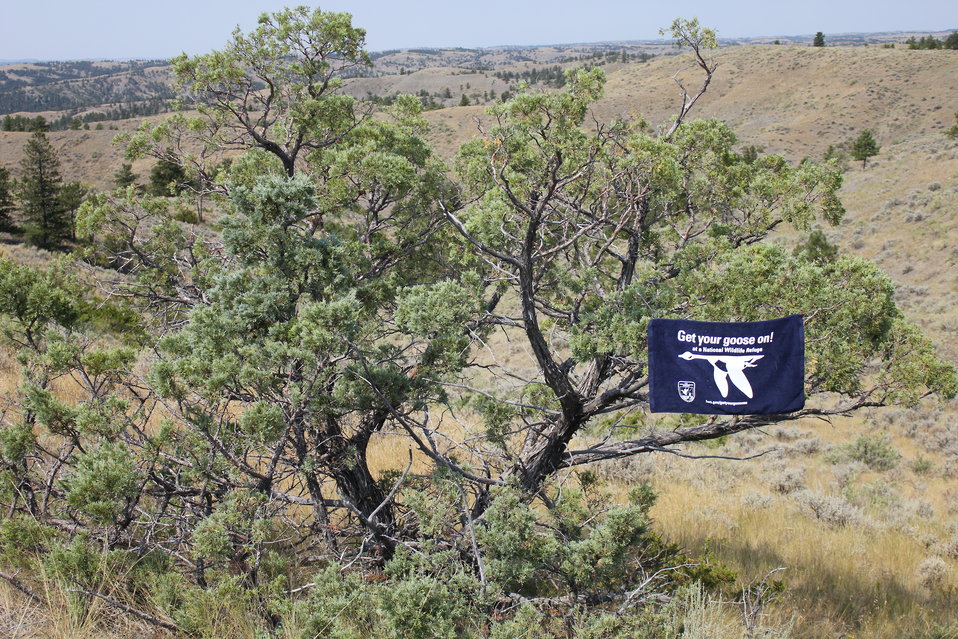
Get Your Goose On!

Photo taken at Antelope Creek at Charles M. Russel National Wildlife Refuge.